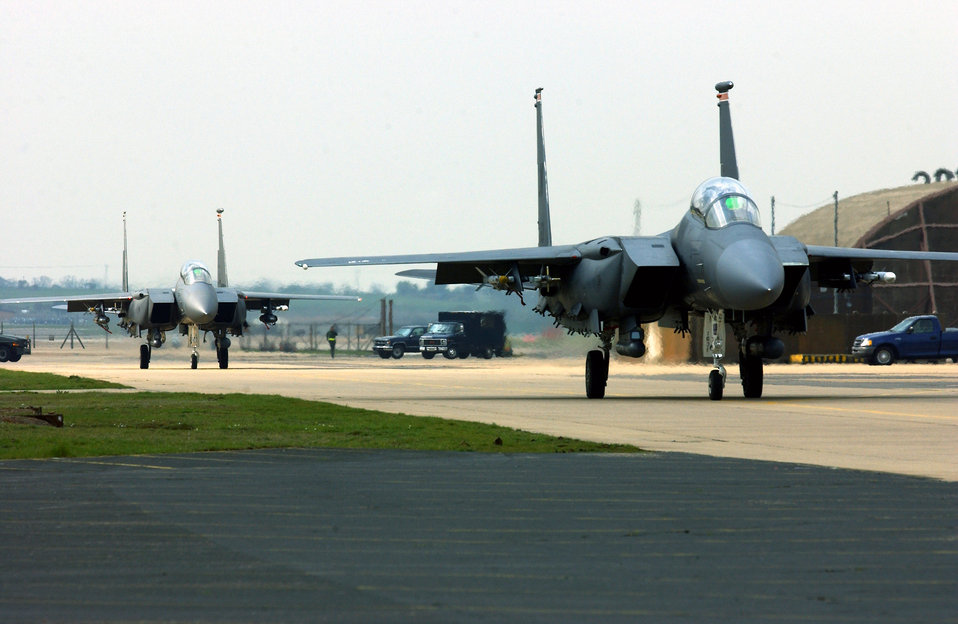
Two strike out

ROYAL AIR FORCE LAKENHEATH, England -- Two F-15E Strike Eagles taxi out for launch here April 14. The F-15Es are assigned to the 494th Fighter Squadron here. The 494th FS is a combat-ready F-15E squadron capable of executing strategic attack, interdiction, and counterair missions supporting U.S. Air Forces in Europe, U.S. European Command and NATO war plans and contingency operations.